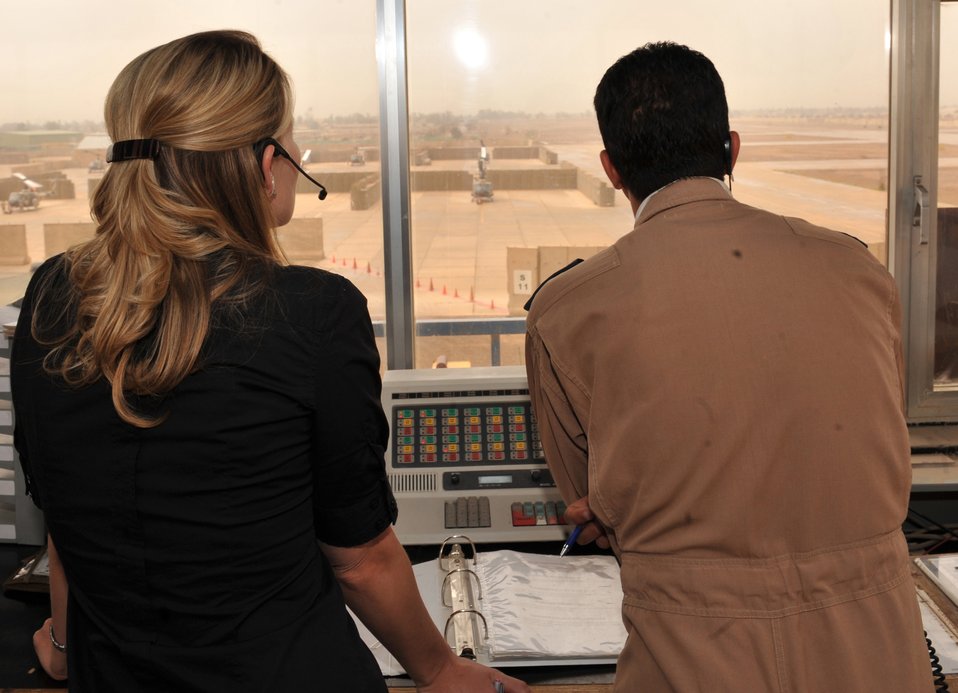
Iraqi airmen closer to controlling Taji tower

Air traffic control instructor Patsy Thomas and Iraqi air force 2nd Lt. Shorsh watch the flightline at Camp Taji, Iraq, from the air traffic control tower. People from the Iraqi Training and Advisory Mission are in the process of transferring all operations to the Iraqi military. Ms. Thomas is a member of the Washington Construct Group and is part of the transition team assisting in instructing future Iraqi air traffic controllers.